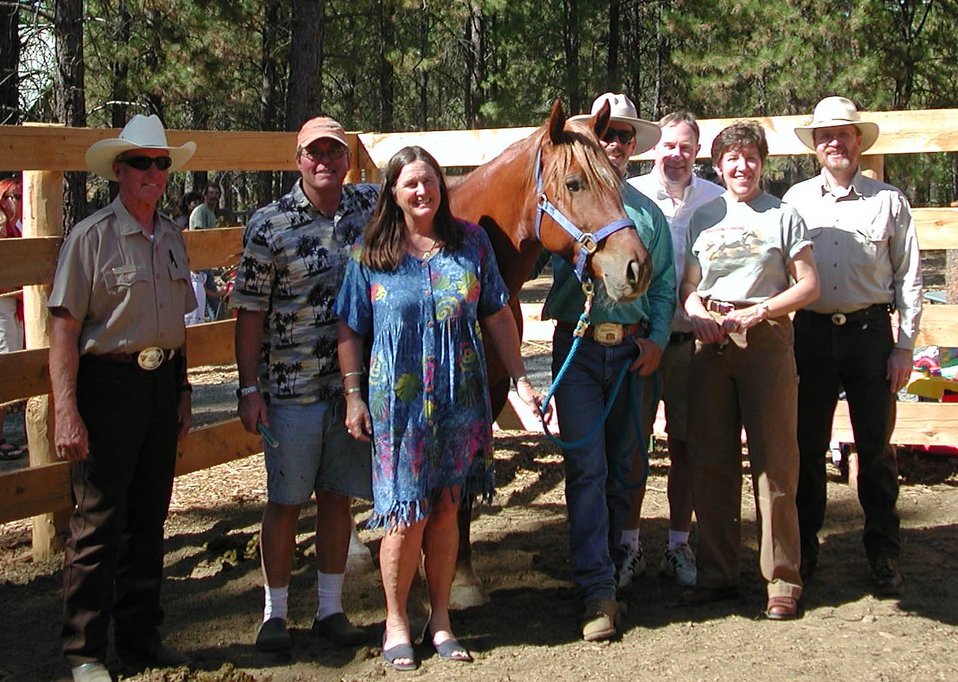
Left to Right: Bill Pieratt BLM Range Specialist, David Magers and Wendy Wisley-Magers adopters, Rick Lauman trainer, Forrest Rodgers Museum President, Elaine Brong BLM State Director, Barron Bail BLM Prineville District Manager.